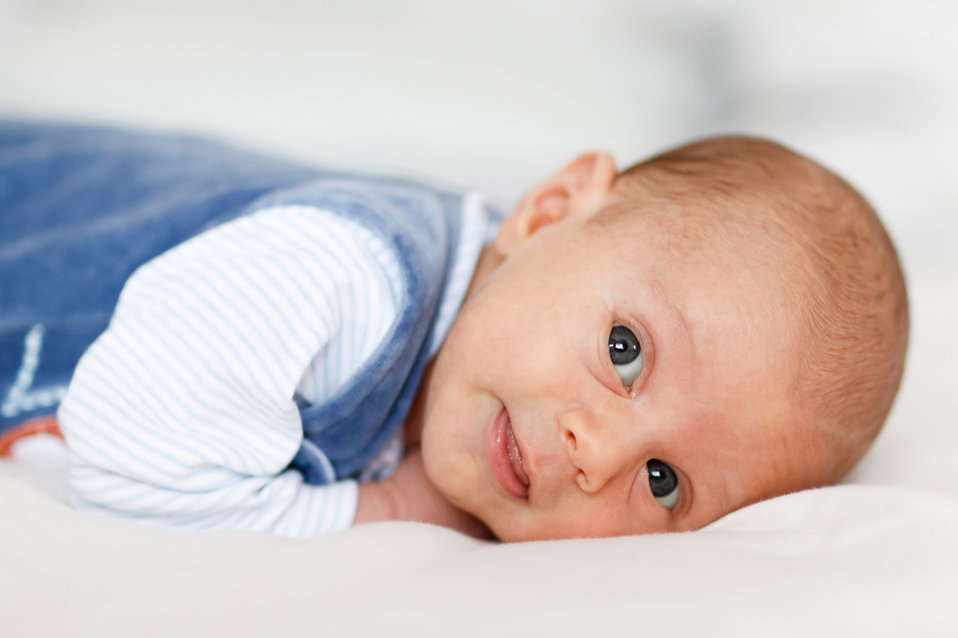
Portrait of a baby boy on white.